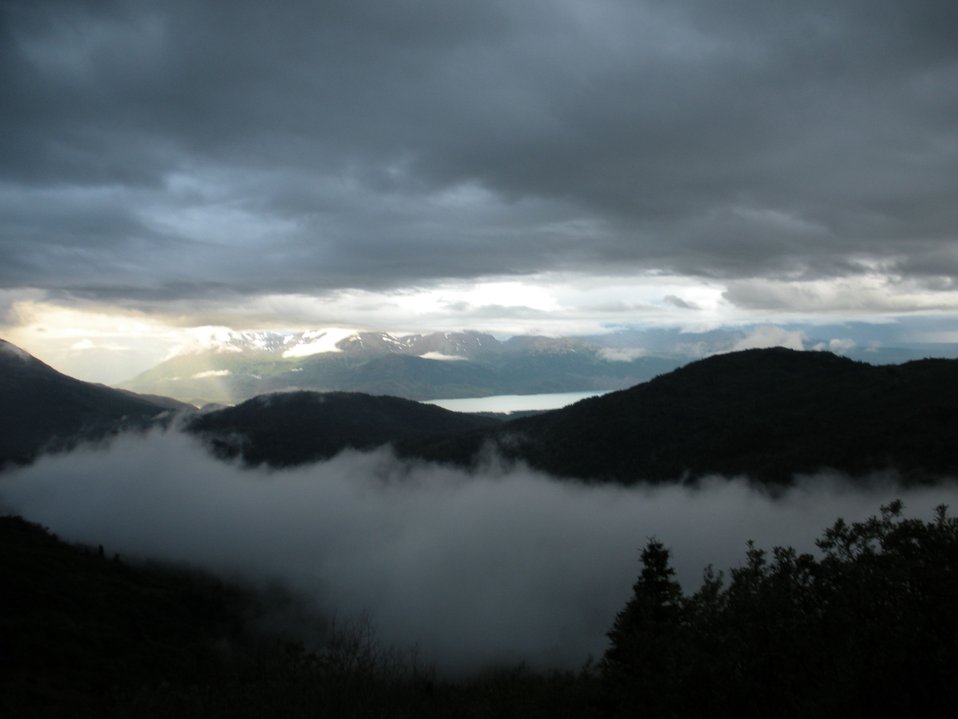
Kenai Skyline Trail 3